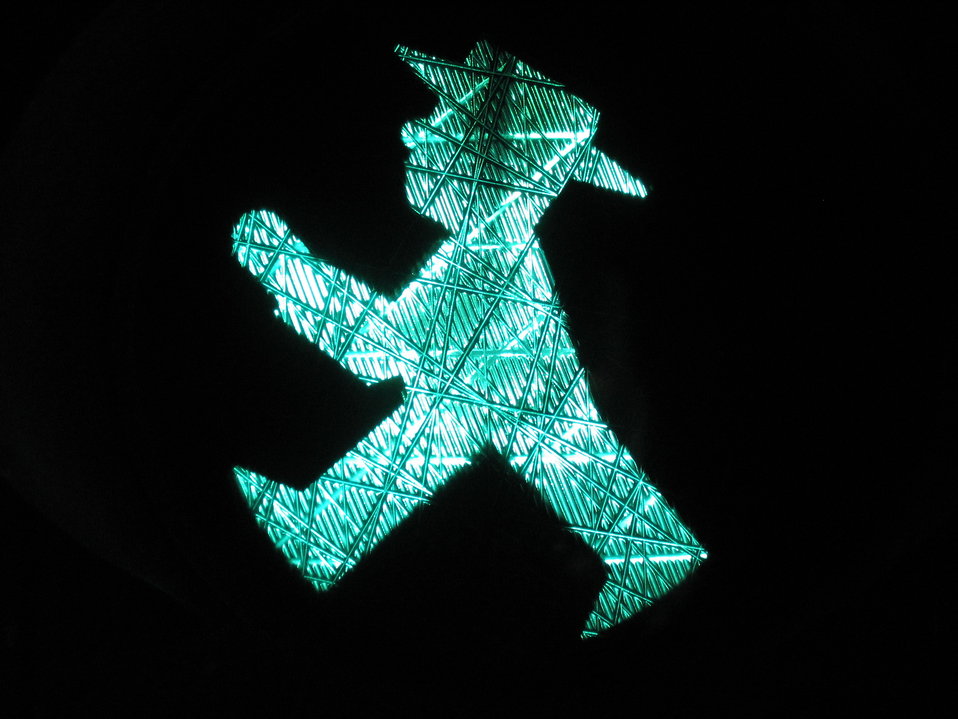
Ampelmännchen - traffic light ('GO') at pedestrian crossings in Berlin Deutsch: Ampelmännchen ('gehen') in Berlin